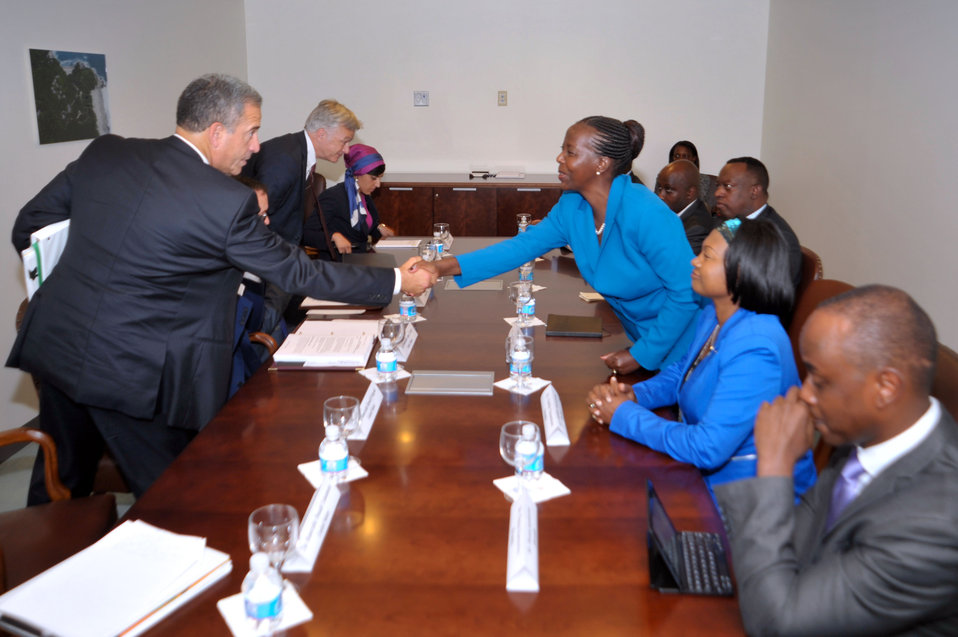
Special Envoy Feingold Greets Rwandan Foreign Minister Mushikiwabo

U.S. Special Envoy for Africa's Great Lakes region Russell Feingold greets Rwandan Foreign Minister Louise Mushikiwabo at the United Nations in New York on July 25, 2013.